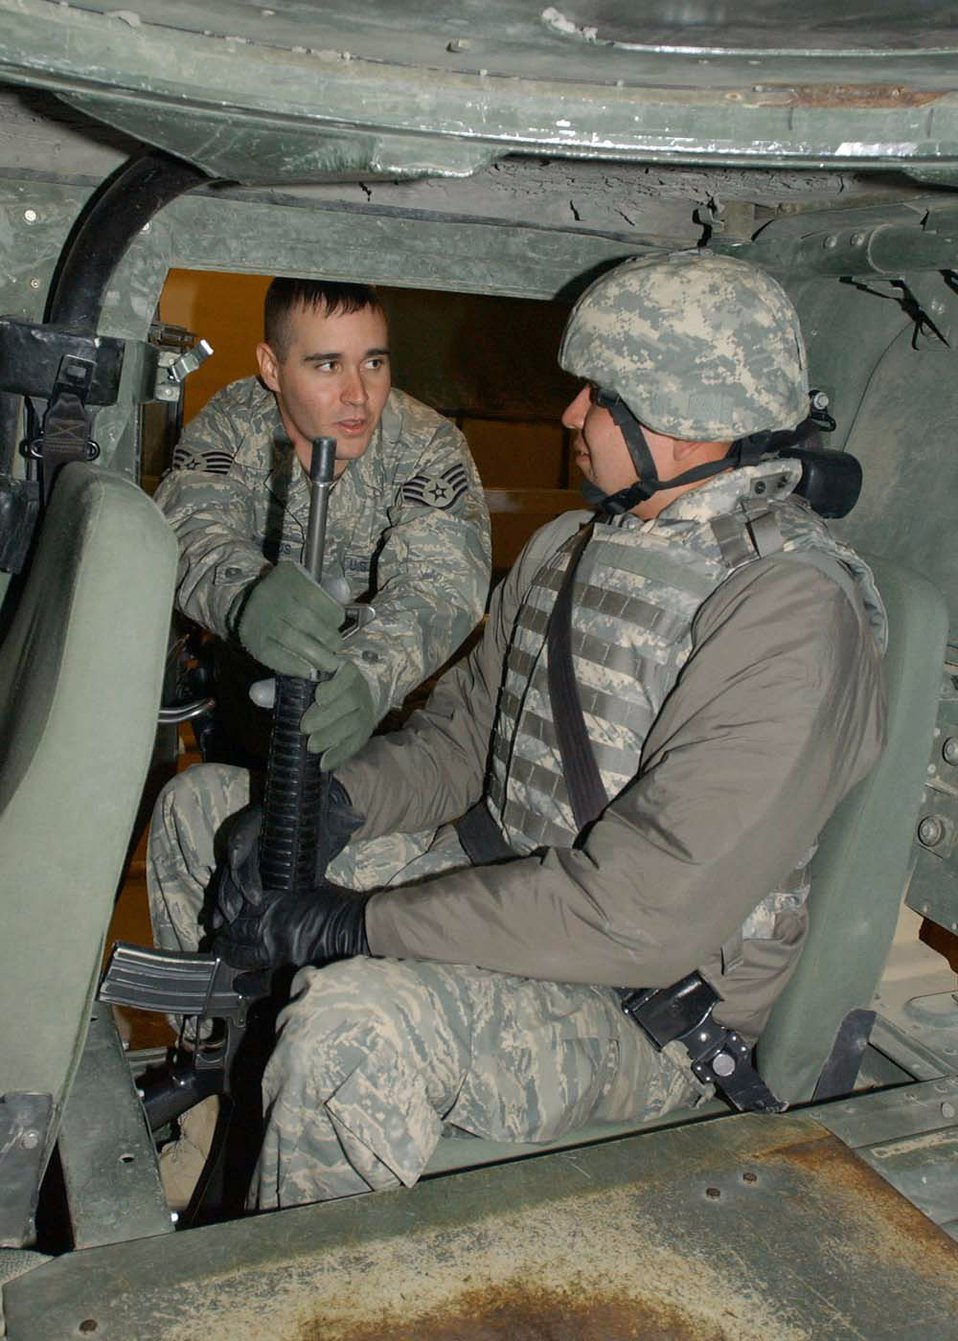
Airmen train with Humvee simulator

Staff Sgt. Michael DeJesus instructs Staff Sgt. Morris Ned on how to hold a weapon while in a convoy during Humvee Egress Rollover Training. The training teaches convoy members how to egress after a rollover. Sergeant DeJesus is the 455th Expeditionary Security Forces Squadron NCO in charge of physical security and his home unit is the 88th Security Forces Squadron, Wright-Patterson Air Force Base, Ohio, and Sergeant Morris, a 455th Expeditionary Security Forces force protection escort, is deployed from the 81st Communications Squadron, Keesler AFB, Miss.